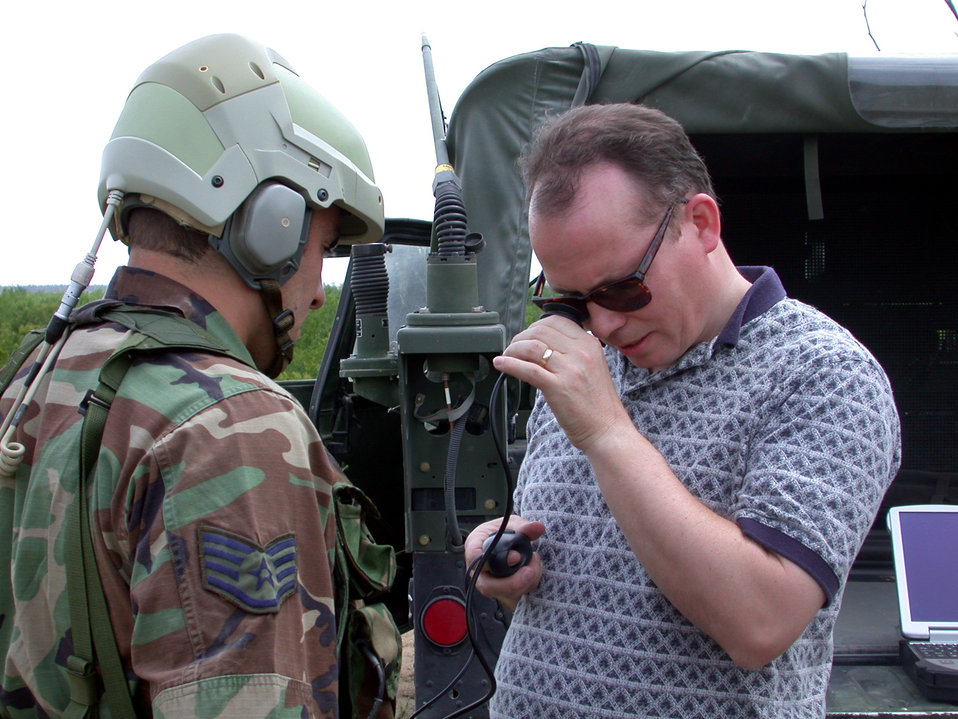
R2 helment

WRIGHT-PATTERSON AIR FORCE BASE, Ohio (AFPN) -- Dr. David Darkow explains the R2 helmet to Staff Sgt. Roman Lopez, who is assigned to the Air Combat Command Tactical Air Control Party. The helmet is designed to increase a user's efficiency, effectiveness and situational awareness on the battlefield. It includes audio, visual and computer-aided enhancements. Darkow is assigned to the Air Force Research Laboratory's human effectiveness directorate here.